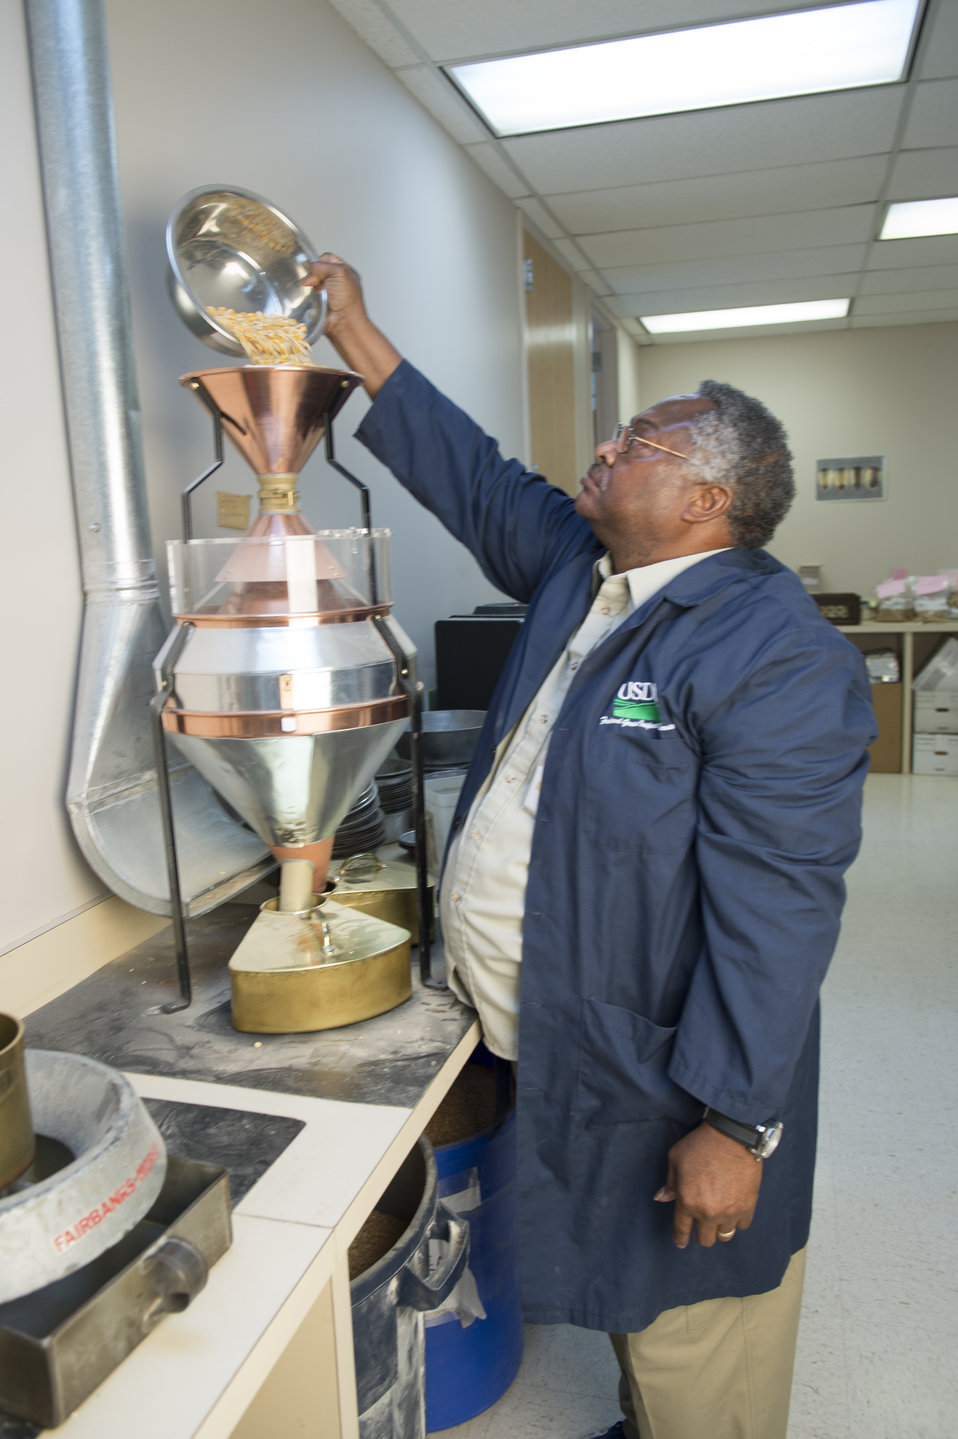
A U.S. Department of Agriculture (USDA) Grain Inspection, Packers and Stockyards Administration (GIPSA) Federal Grain Inspection Service (FGIS) scientist tests corn at the FGIS inspection laboratory in New Orleans, LA on Monday, Nov. 18, 2013.